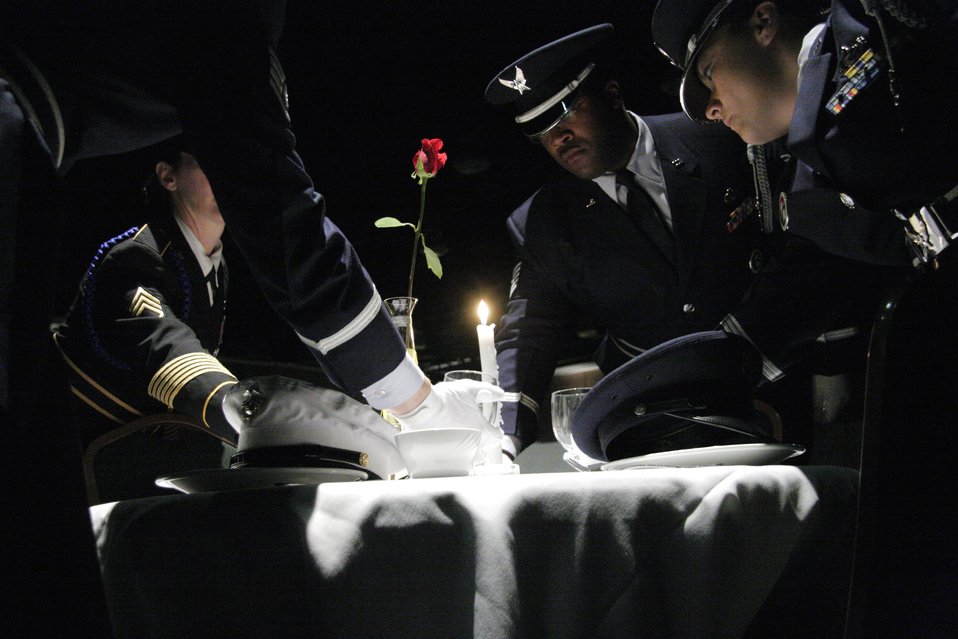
Oklahoma Military Ball

Members of the Governor's Color Guard perform the POW/MIA ceremony during the National Guard Association of Oklahoma's Military Ball in Oklahoma City on Saturday, April 22, 2006. More than 500 people attended the annual event.